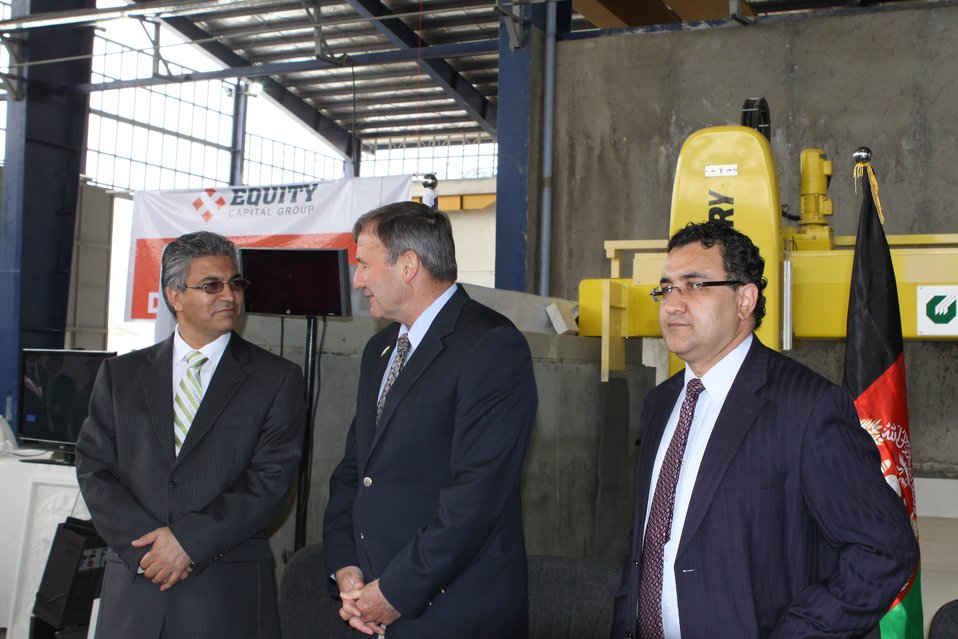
100525 Hirat Marble Conference 108